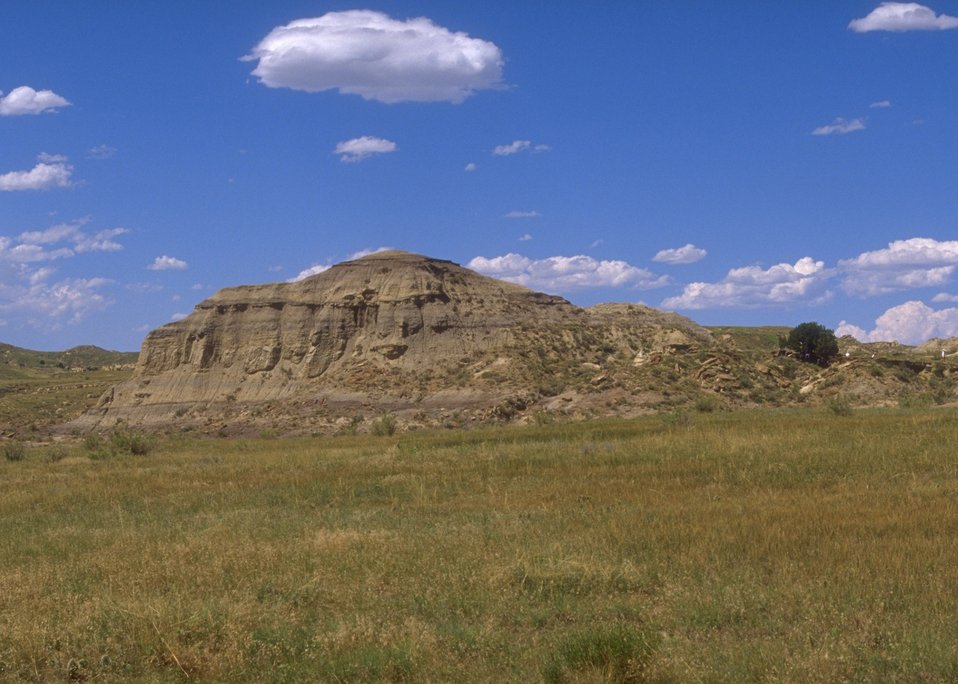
General view of Lance Creek Fossil Area, Newcastle Field Office.